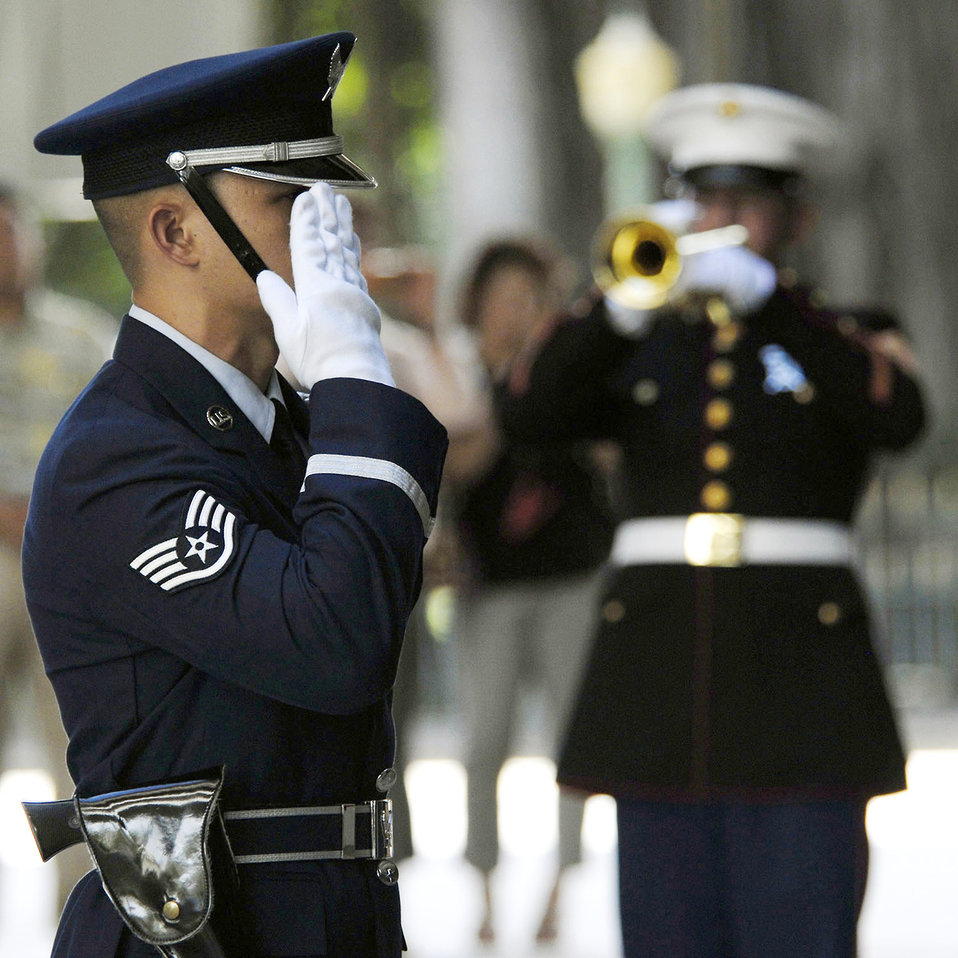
Airmen honor the fallen

A member of the Joint Base Hickam-Pearl Harbor, Hawaii, honor guard salutes during a rifle volley and the playing of